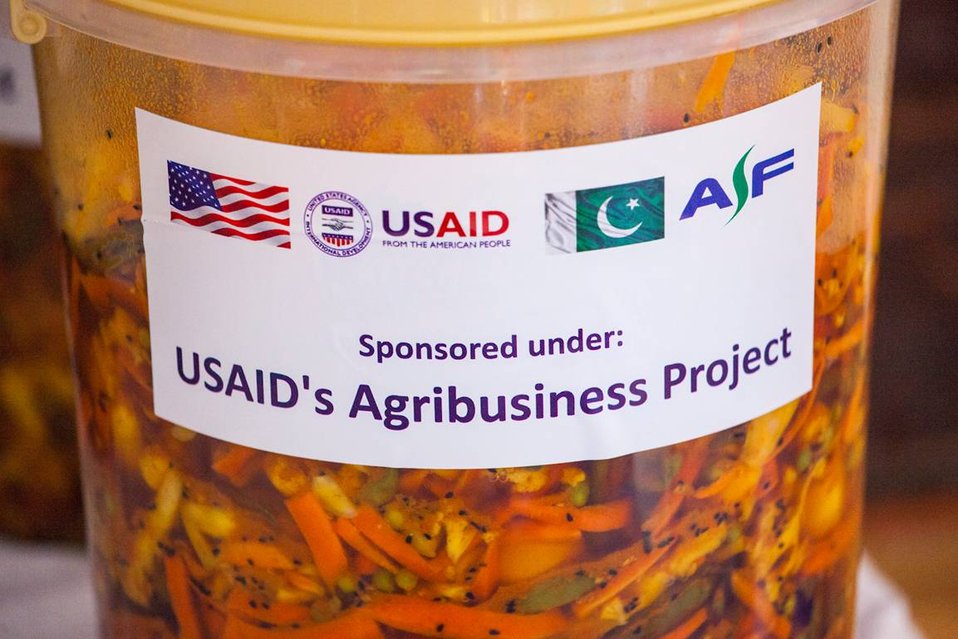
USAID's Agribusiness Project Women FEG for Food Processing - Pickle Production at Village Jabbi

Finally, the women will be trained in marketing and distribution, and provided with equipment and materials to get their business off the ground.
www.usaid.gov/pk/db/sectors/growth/project 750.html